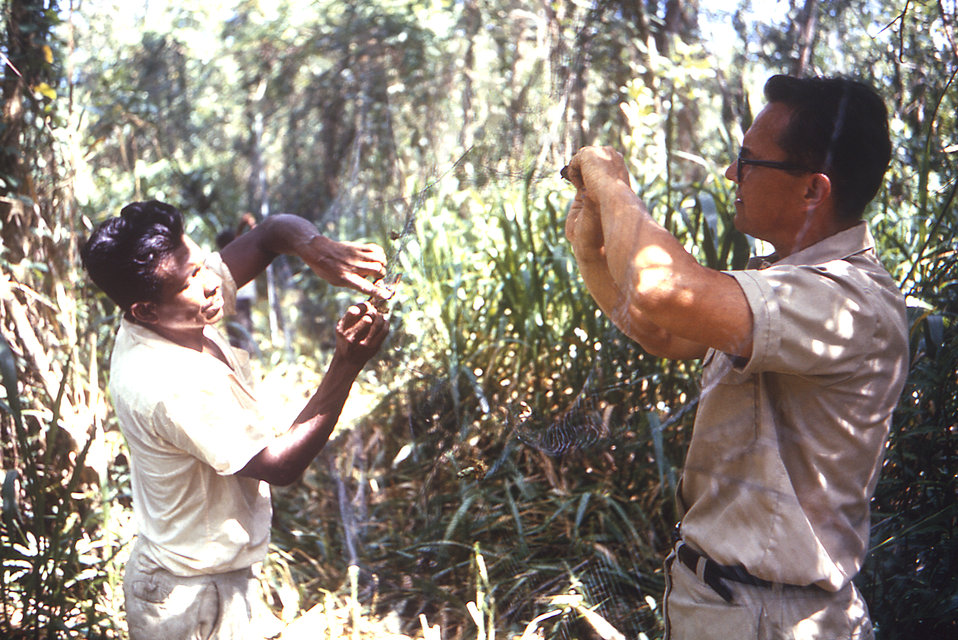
This 1969 image depicts two men in the jungles of Belize, formerly British Honduras, who'd set a Japanese mist net in order to capture some of the local representative birds, and were in the process of extricating two small birds from the net.